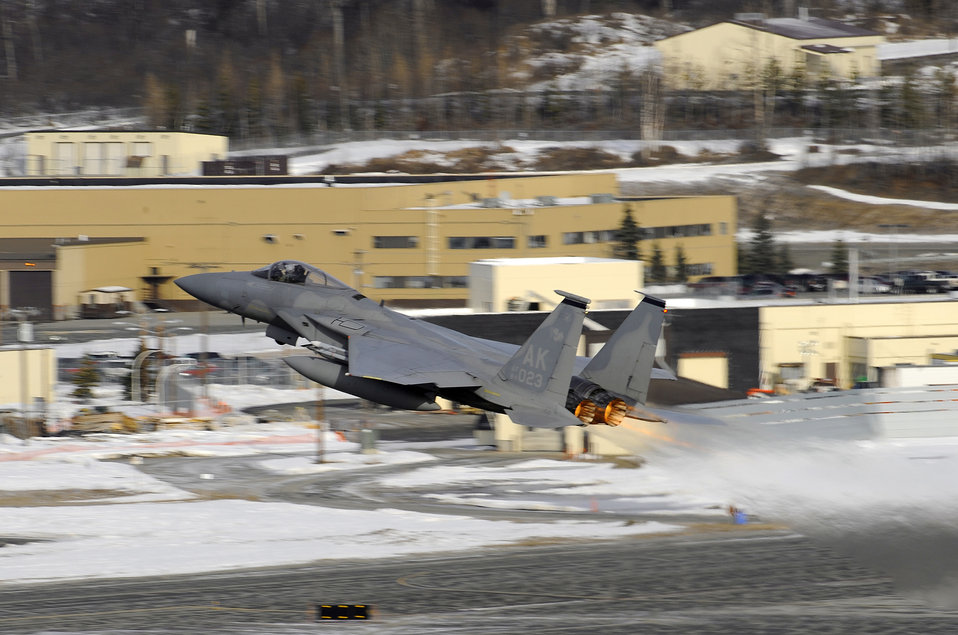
Operations group validates new capability

An F-15 Eagle takes off prior to a live fire training mission over an Alaskan range April 7, 2010, at Elmendorf Air Force Base, Alaska. The air-to-air gun mission consisted of a Cessna Conquest towing an aerial banner 2,000 feet behind it while two F-15 Eagles took turns firing at the banner.